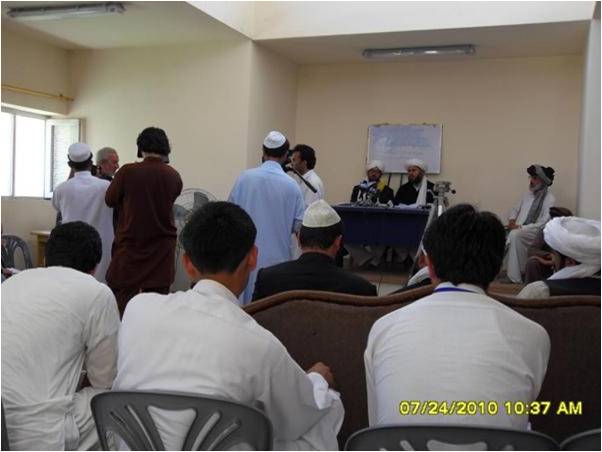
Trial Without Tribulations